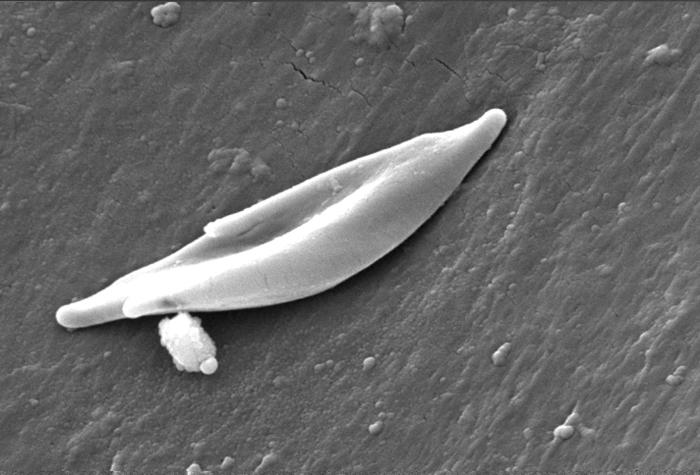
This scanning electron micrograph (SEM) revealed some of the ultrastructural morphology of a sickle cell RBC found in a blood specimen of an 18 year old female patient with sickle cell anemia, (HbSS); People who have this form of sickle cell disease inherit two sickle cell genes ('S'), one from each parent. This is commonly called 'sickle cell anemia', and is usually the most severe form of the disease.